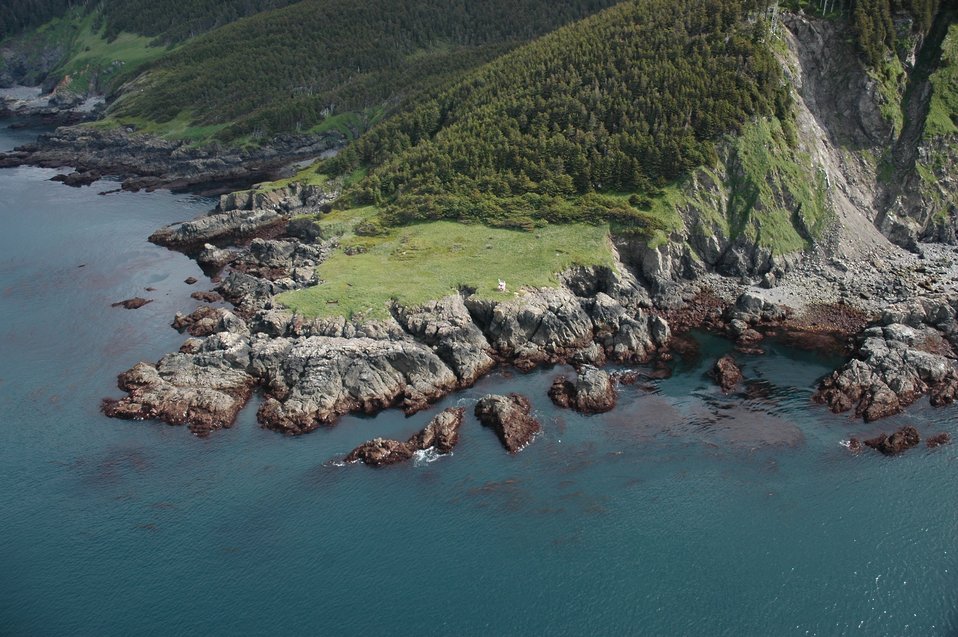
Aerial photograph. The navigation light at the SW tip of Elizabeth Island which marks the SE end of Cook Inlet and SW tip of the Kenai Peninsula.